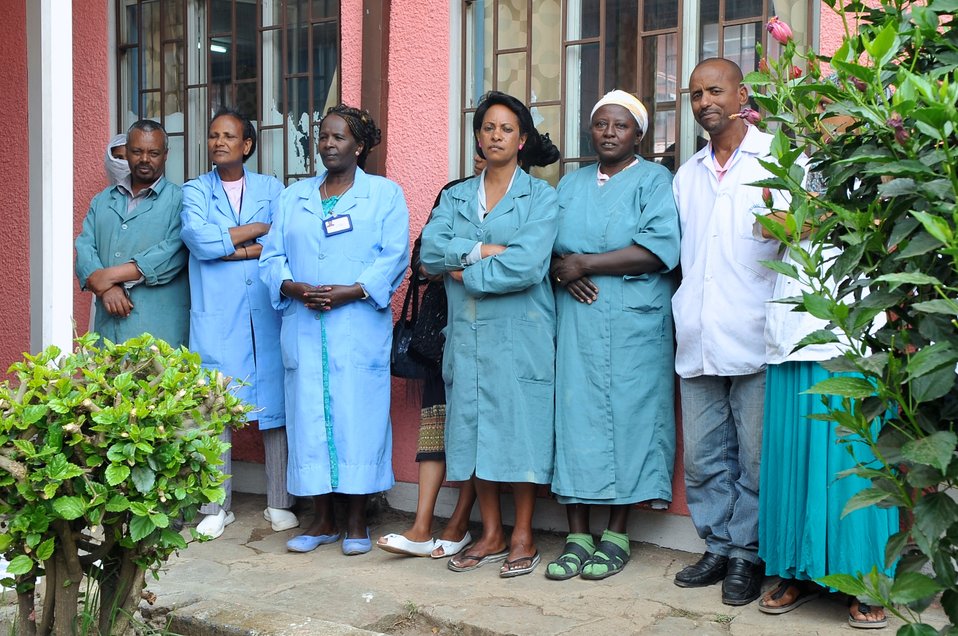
Nurses Watch as Secretary Kerry Speaks At HIV Clinic in Ethiopia

Nurses watch as U.S. Secretary of State John Kerry speaks following a tour of a PEPFAR-supported HIV clinic in Addis Ababa, Ethiopia, on May 1, 2014.